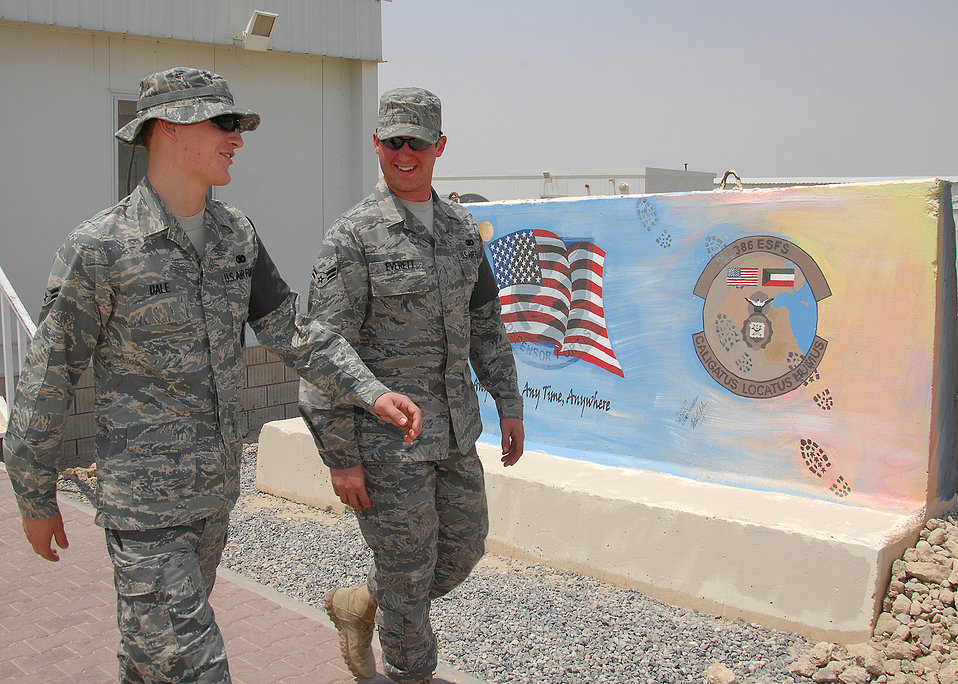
Everett

SOUTHWEST ASIA -- Airman 1st Class William Dale, left, and Airman 1st Class Thomas Everett, both assigned to the 386th Expeditionary Security Forces Squadron, talk on Aug. 26 about how quick thinking avoided a tragic incident at an air base in Southwest Asia. During a cargo mission in early August, Airman Everett saved Airman Dale from possible brain damage by oxygen deprivation. Airman Everett has been nominated for the Airman's Medal for his efforts. Both Airmen are deployed from Nellis Air Force Base, Nev.